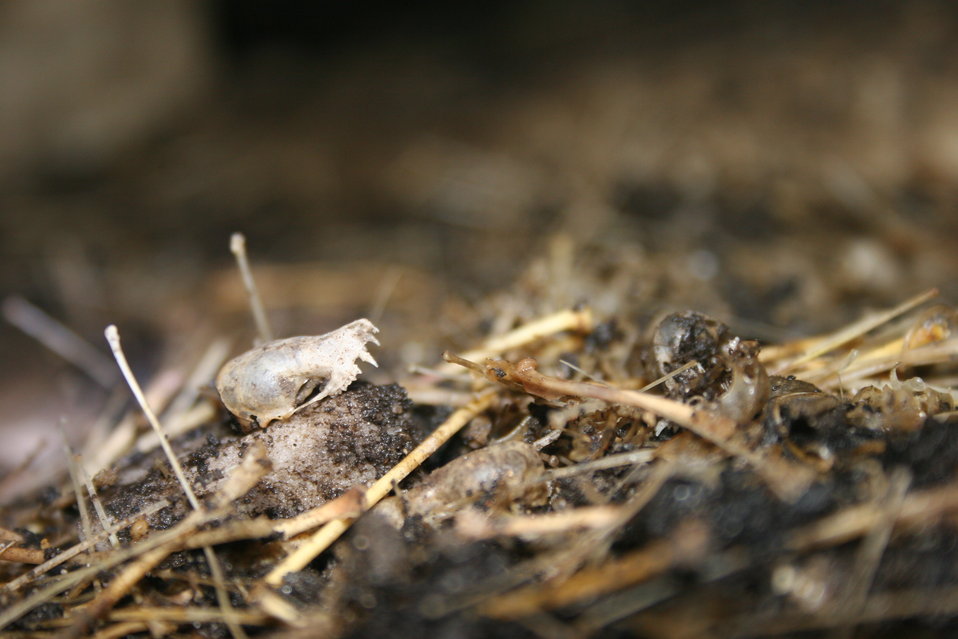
Bat skull and bones in Mt. Aeolus Cave